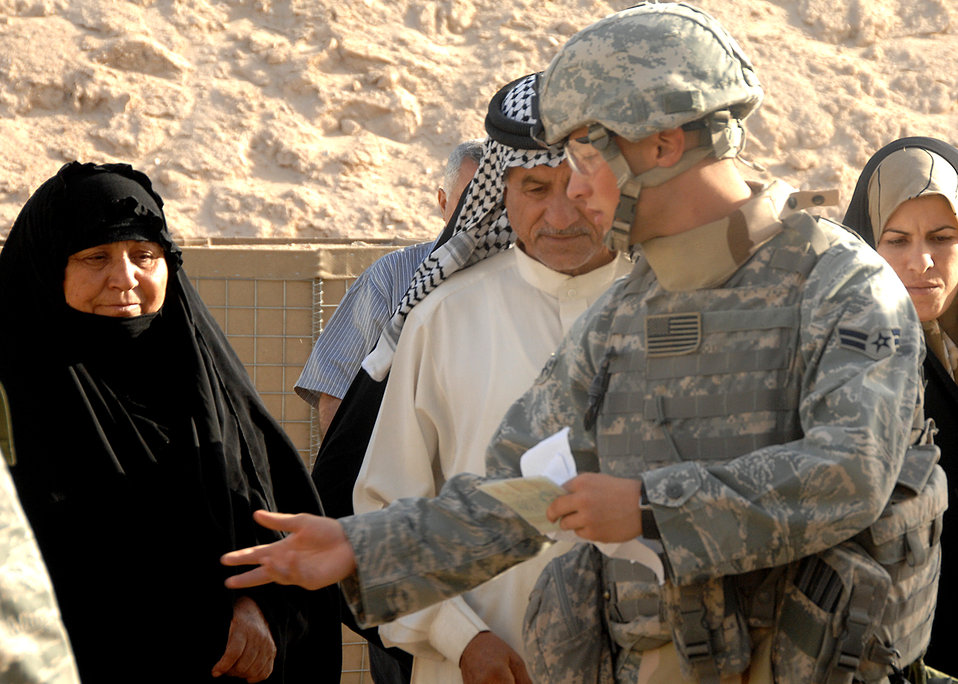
Airmen play goodwill role at Camp Bucca

A security forces member assigned to the 586th Air Expeditionary Group escorts a group of Iraqi visitors to a security checkpoint Oct. 4 at Camp Bucca, Iraq. The 586th AEG provides security for the camp's visitation center, where nearly 400 visitors are allowed to visit daily with detainees being held at the theater internment facility.